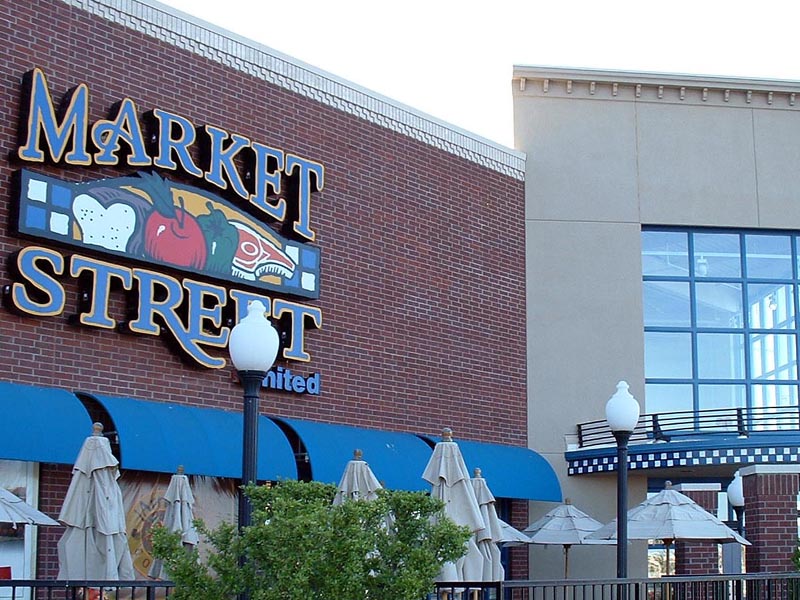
Picture of a typical United Supermarkets 'Market Street' store. This is actually the first one they opened, it's on 50th Street in Lubbock. Picture from personal collection of the photographer/submitter. Released into the public domain.